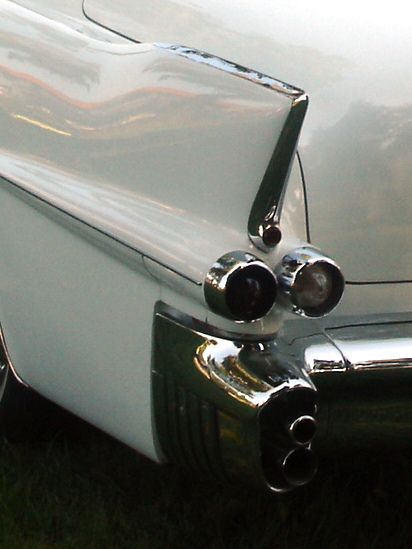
Heck eines Cadillac Eldorado aus 1953